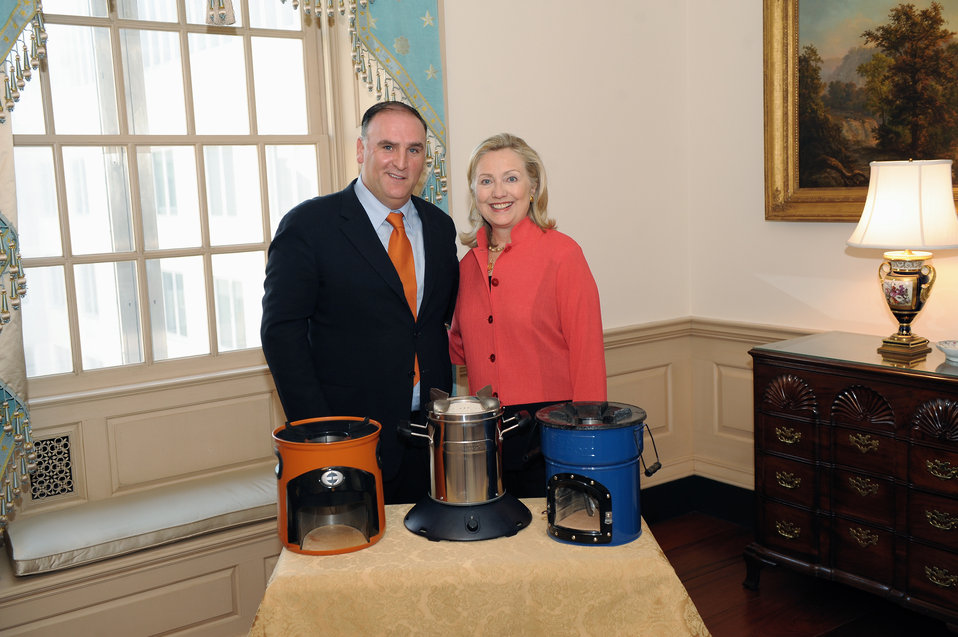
Secretary Clinton Meets With Chef Jose Andres

U.S. Secretary of State Hillary Rodham Clinton meets with Chef José Andrés, Culinary Ambassador for the Global Alliance for Clean Cookstoves, at the U.S. Department of State in Washington, D.C., on September 13, 2011.